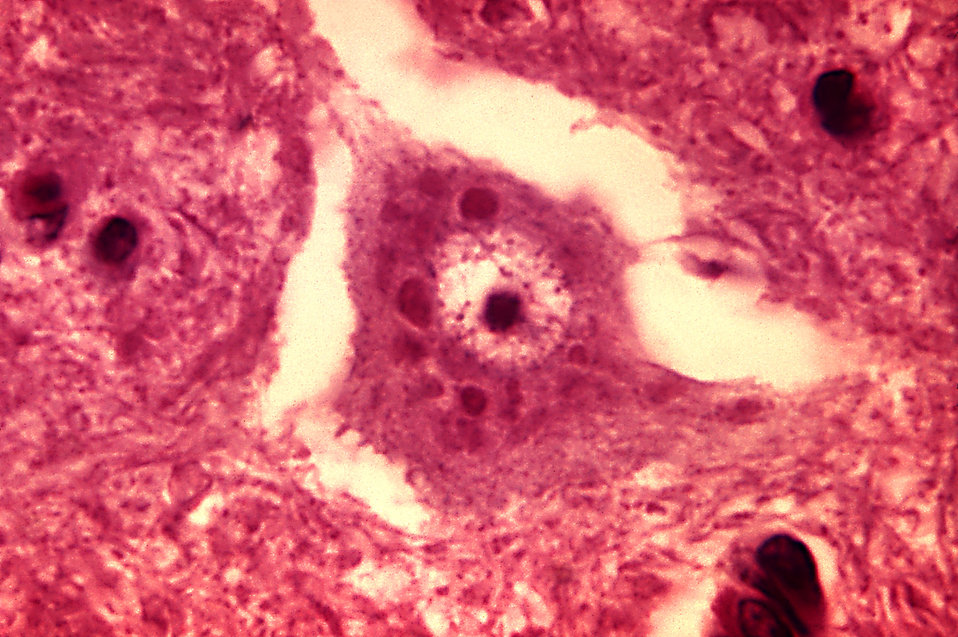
This micrograph depicts the histopathologic changes associated with rabies encephalitis prepared using an H&E stain.